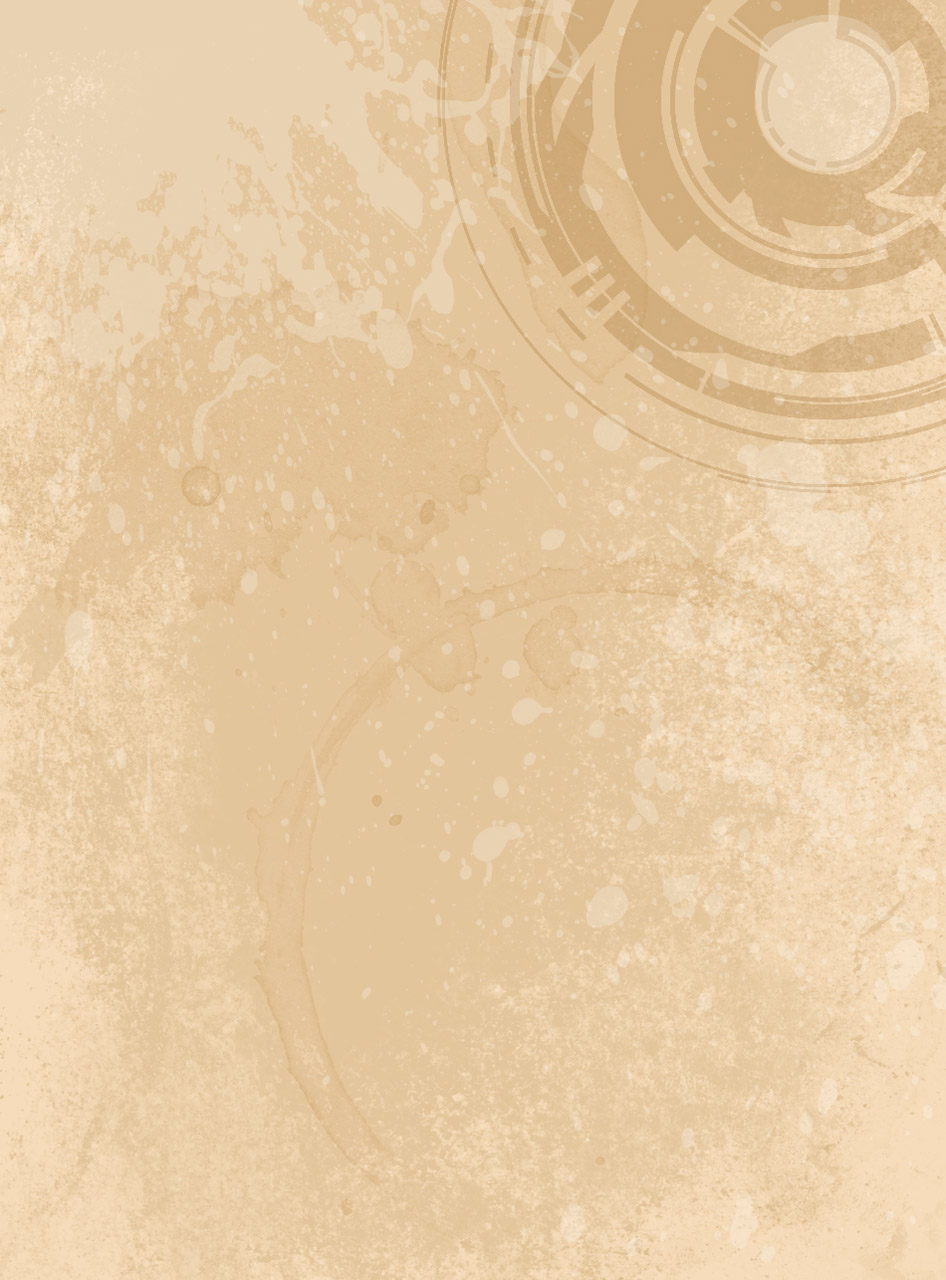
Pale beige background with grunge elements.